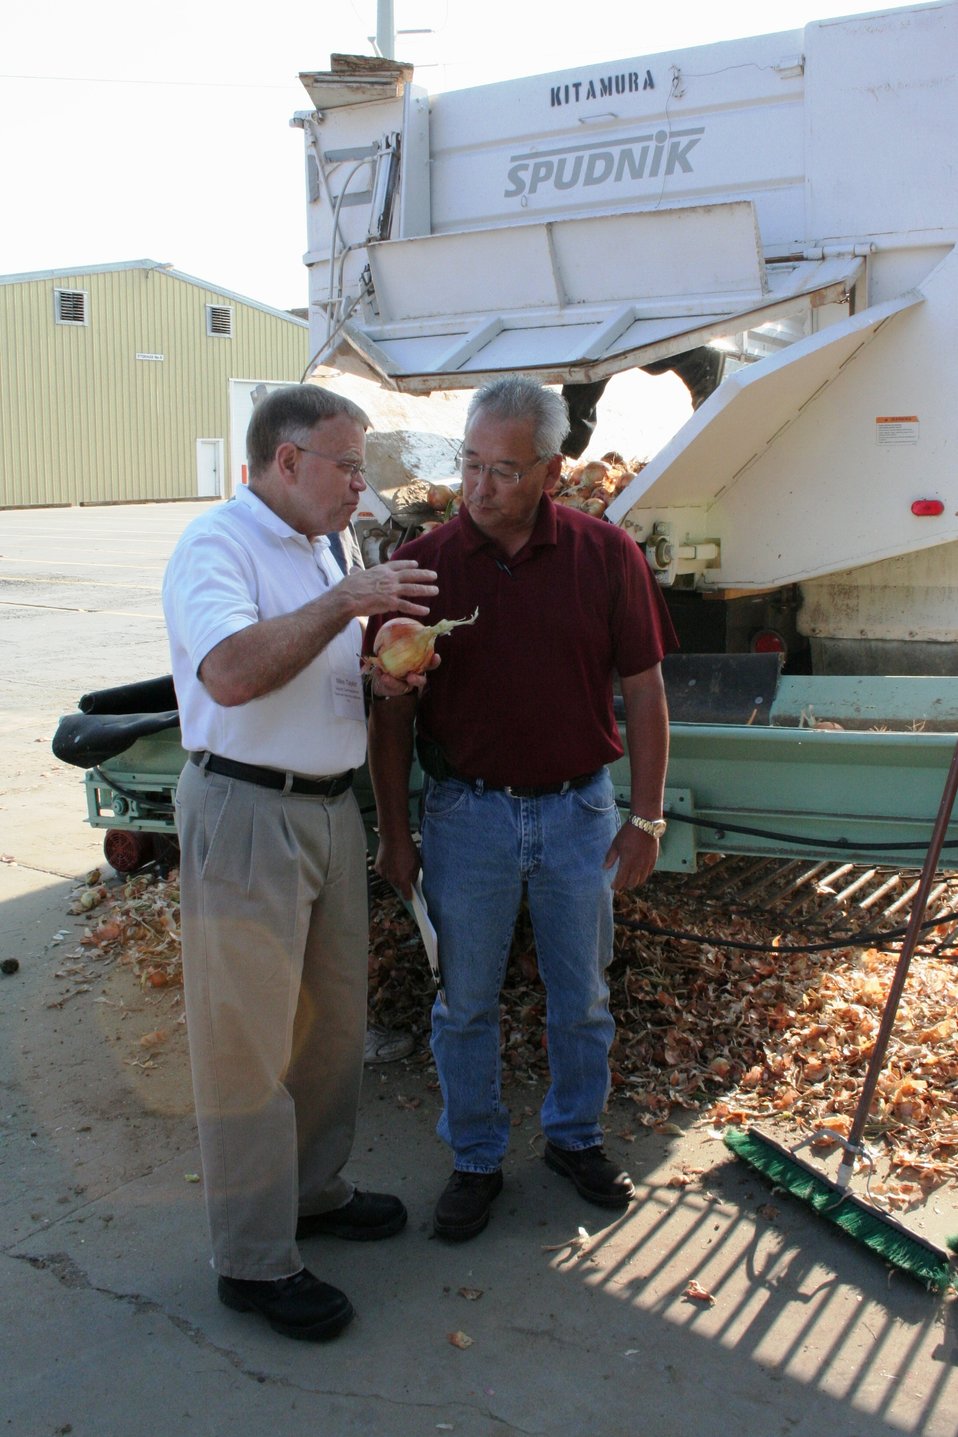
On the Road with Mike Taylor

FDA Deputy Commissioner Michael Taylor (left) and colleagues started a five-day tour of the Pacific Northwest on Sunday, Aug. 11, 2013 -- visiting Idaho, Oregon and Washington -- to get a first-hand look at produce production and irrigation operations, and to discuss the proposed Produce Safety Rule with growers, food industry representatives and state officials. For more about Mike's multi-region tour, read these FDA Voice blog posts:

• Hearing the Concerns of Maine Growers Striving for Agricultural Diversity
• On the Road with Mike Taylor: Touring the Pacific Northwest
• On the Road with Mike Taylor, Day 2: Frank Talk in Farm Country
• On the Road with Mike Taylor, Day 3: Families and Partnerships
• On the Road with Mike Taylor, Day 4: Looking to the Future